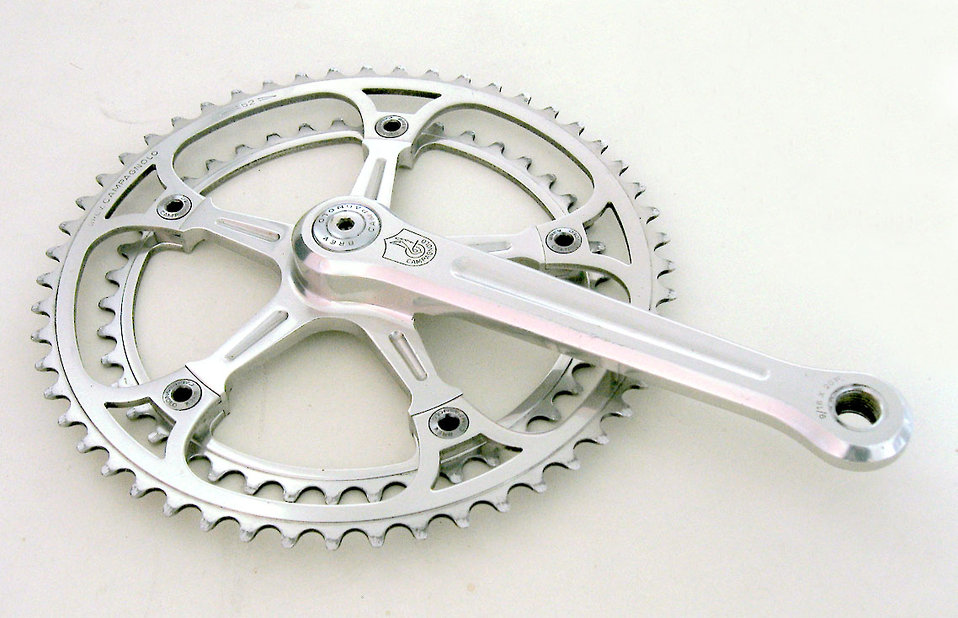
Picture of Campagnolo Super Record crankset, made in 1981.